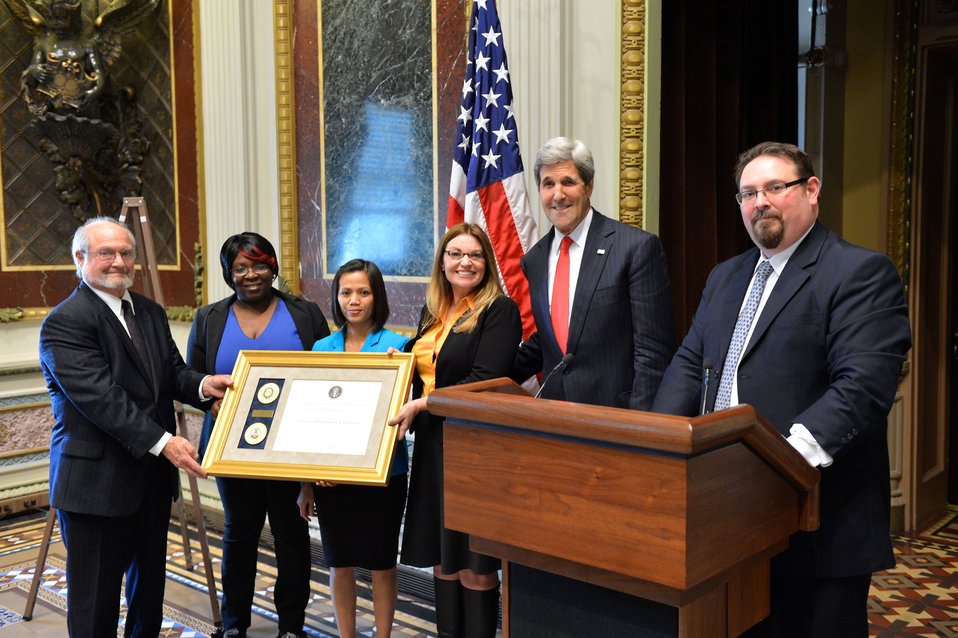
Secretary Kerry Chairs the President’s Interagency Task Force to Monitor and Combat Trafficking in Persons

U.S. Secretary of State John Kerry chairs the annual meeting of the President’s Interagency Task Force to Monitor and Combat Trafficking in Persons at the White House in Washington, D.C., on April 8, 2014.